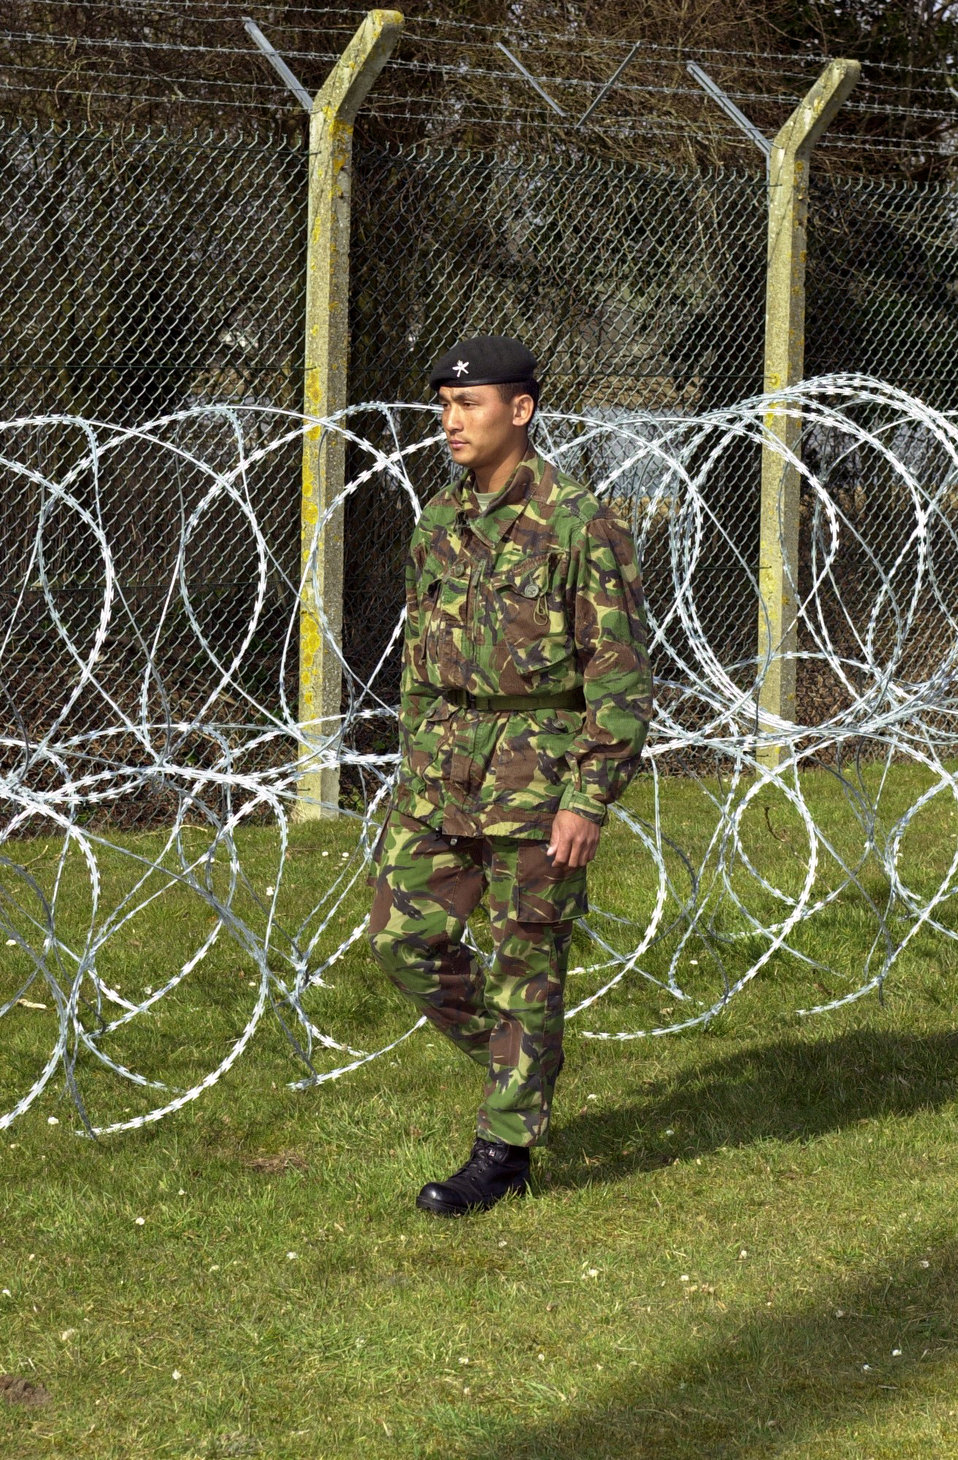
Gurkha Rifles

ROYAL AIR FORCE FAIRFORD, England -- A rifleman from the 3rd Regiment of Gurkha Rifles, an elite unit within the British Army, patrols the perimeter here March 20. The legendary Nepali fighters of the 3rd RGR are hereat to safeguard the base, joining forces with Air Force security forces, Royal Air Force and Ministry of Defence Police and local constabularies.